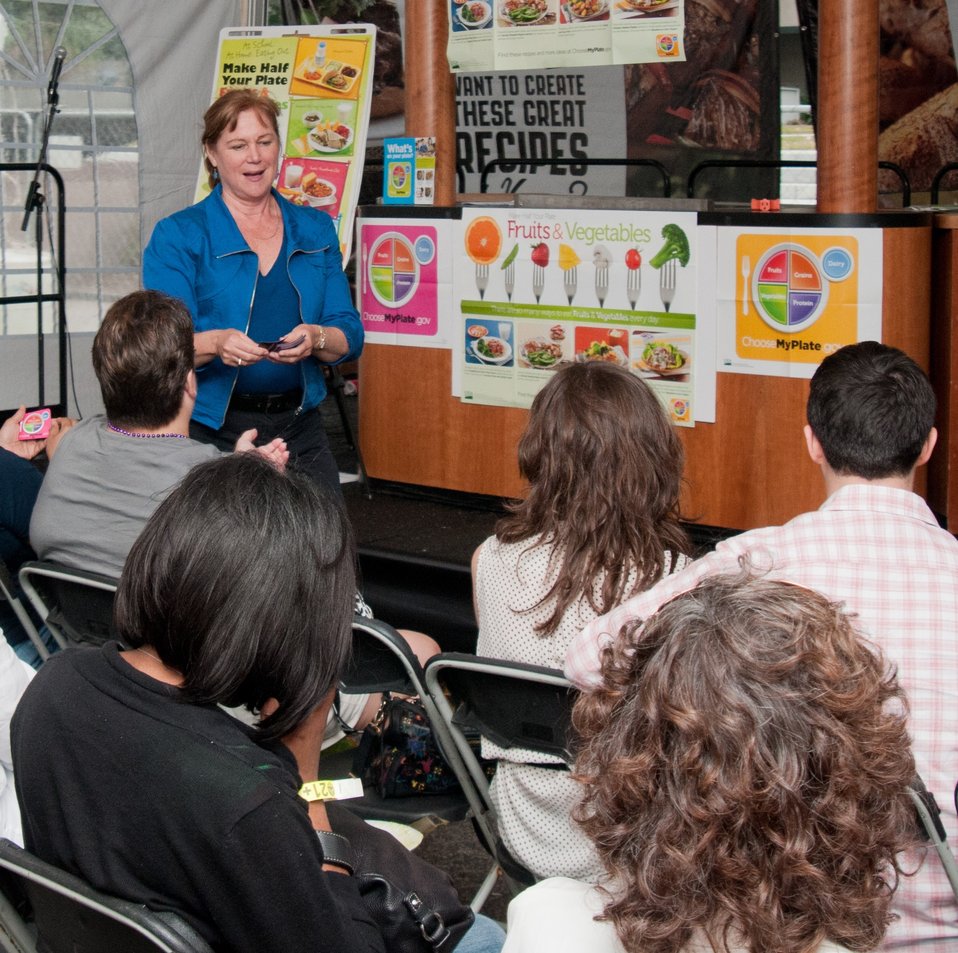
Elaine McLaughlin hands out refridgerator magnets with the 'My Plate' grapic and talks about the nutritional benifits; the many ways people can access nutrition information; and suggests how the information can help them live healthier lives, during her presentation at the Taste of D.C., event that highlights more than 70 eateries, 30 specialty beer providers, the United Service Organization (USO) Metropolitan Washington, and live bands. It is anticipated that more than 500,000 people will attend over the course of the three-day event, which extends from the White House to the Capitol, along Pennsylvania Ave. in Washington D.C. on Saturday, October 6, 2012. Agriculture Food Safety and Inspection Service specialists presented additional talks and cooking demonstrations during the event. The Agriculture’s mobile Discovery Zone was on hand to educate children and parents about the four main principals of food safety – clean, separate, cook and chill.